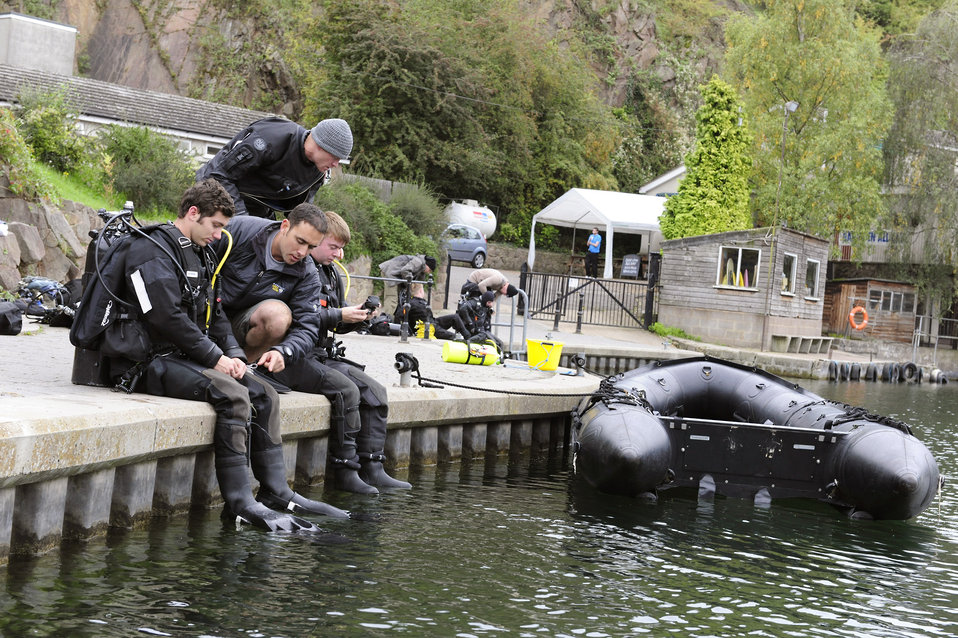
Pararescuemen train to save lives

Pararescuemen from the 56th Rescue Squadron perform equipment checks before entering the water for subsurface search, rescue and recovery training Oct. 5, 2010, at Stoney Cove, England. Pararescuemen wear dry suits when training for real-world missions. Dry suits allow protection from exposure to contaminants while in the water.